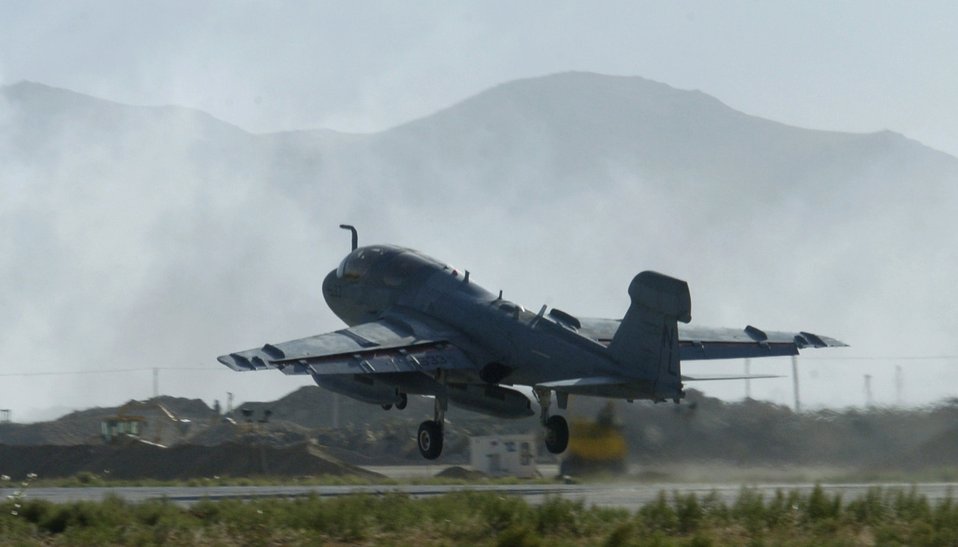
On the prowl

A Navy EA-6B Prowler takes off from Bagram Air Base, Afghanistan, on Thursday, June 15. Air Force and Navy crewmembers here fly the Prowler, providing support to ground troops in Afghanistan.